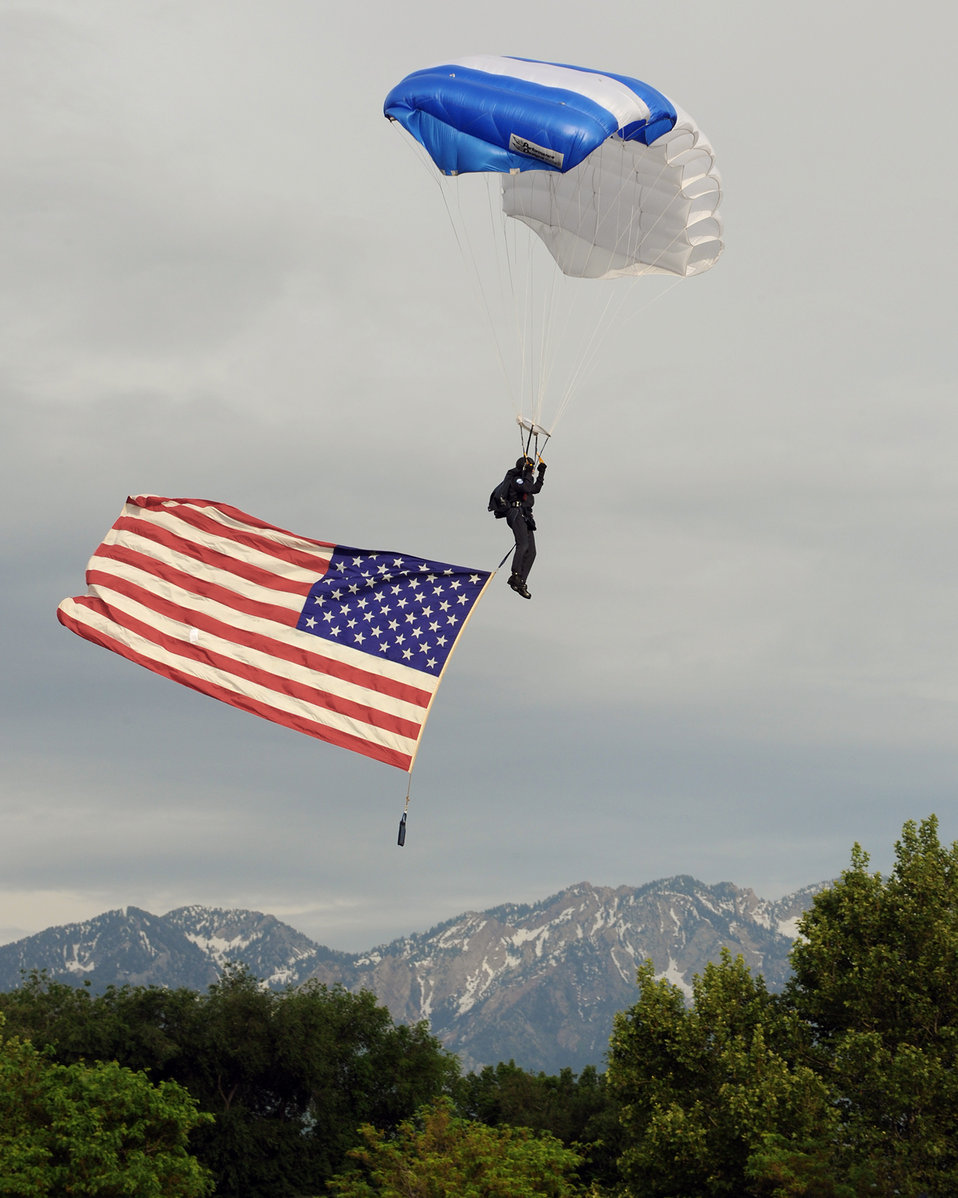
Grand entrance

Master Sgt. David Fremin floats into the Spring Mobile Ballpark carrying the American flag with him as part of the opening activities held for the Airmen's Opener baseball game during Air Force Week-Salt Lake City June 1 in Utah. Sergeant Fremin is a member of the U.S. Air Force Academy Wings of Blue parachute team.